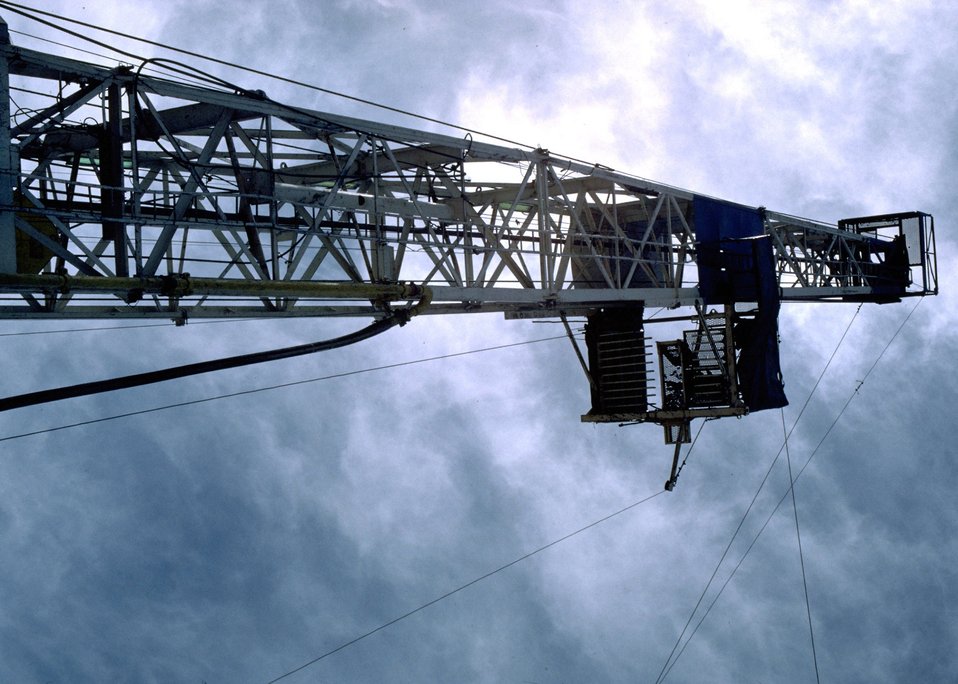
Deep well rig.